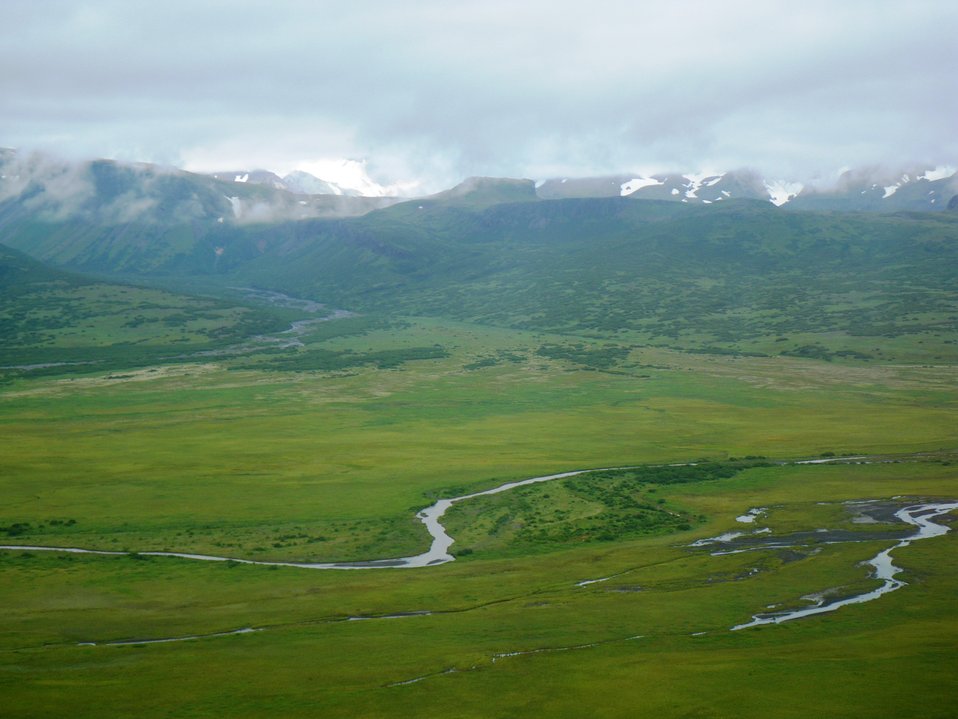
Unimak Landscapes

SE Unimak Island, Alaska Maritime National Wildlife Refuge